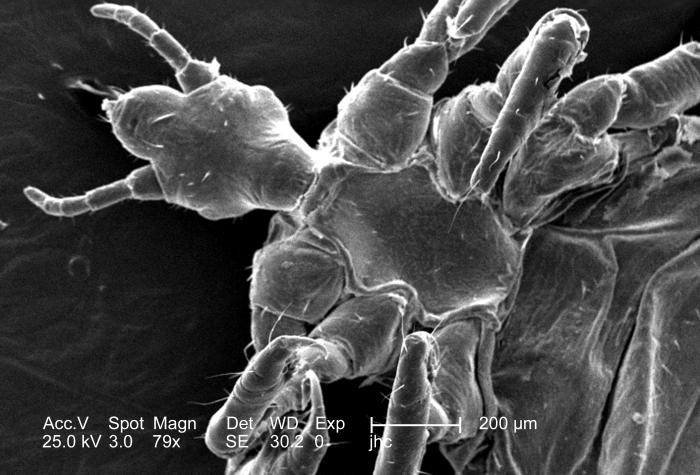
Under a relatively low magnification of 79x, this 2006 scanning electron micrograph (SEM) depicted a ventral, or inferior view, of a male louse, Pediculus humanus var. corporis. The head, or cephalic region is at the left, from which its two antennae were extended. The head attached to the thoracic region, which gave rise to its three pairs of jointed legs. While the abdominal region, towards the far right, is the region in which was housed the stomach, and intestines. The 'jointed' nature of its extremities, designates this organism as a member of the phylum Arthropoda, and the fact that there are three pairs of legs, the louse is, thereby, placed into the class, Insecta. Note the small, 'hair-like' structures adorning the exoskeletal surface of this insect. These are known as 'setae', and are not hairs at all, but extensions of the chitinous exoskeletal surface, which provide the organism with sensorial data about its surroundings.